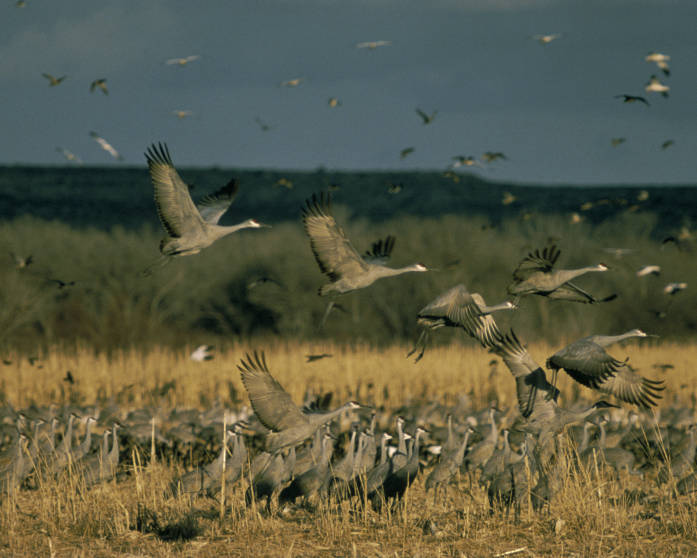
sandhill cranes

Lake Andes National Wildlife Refuge, SD